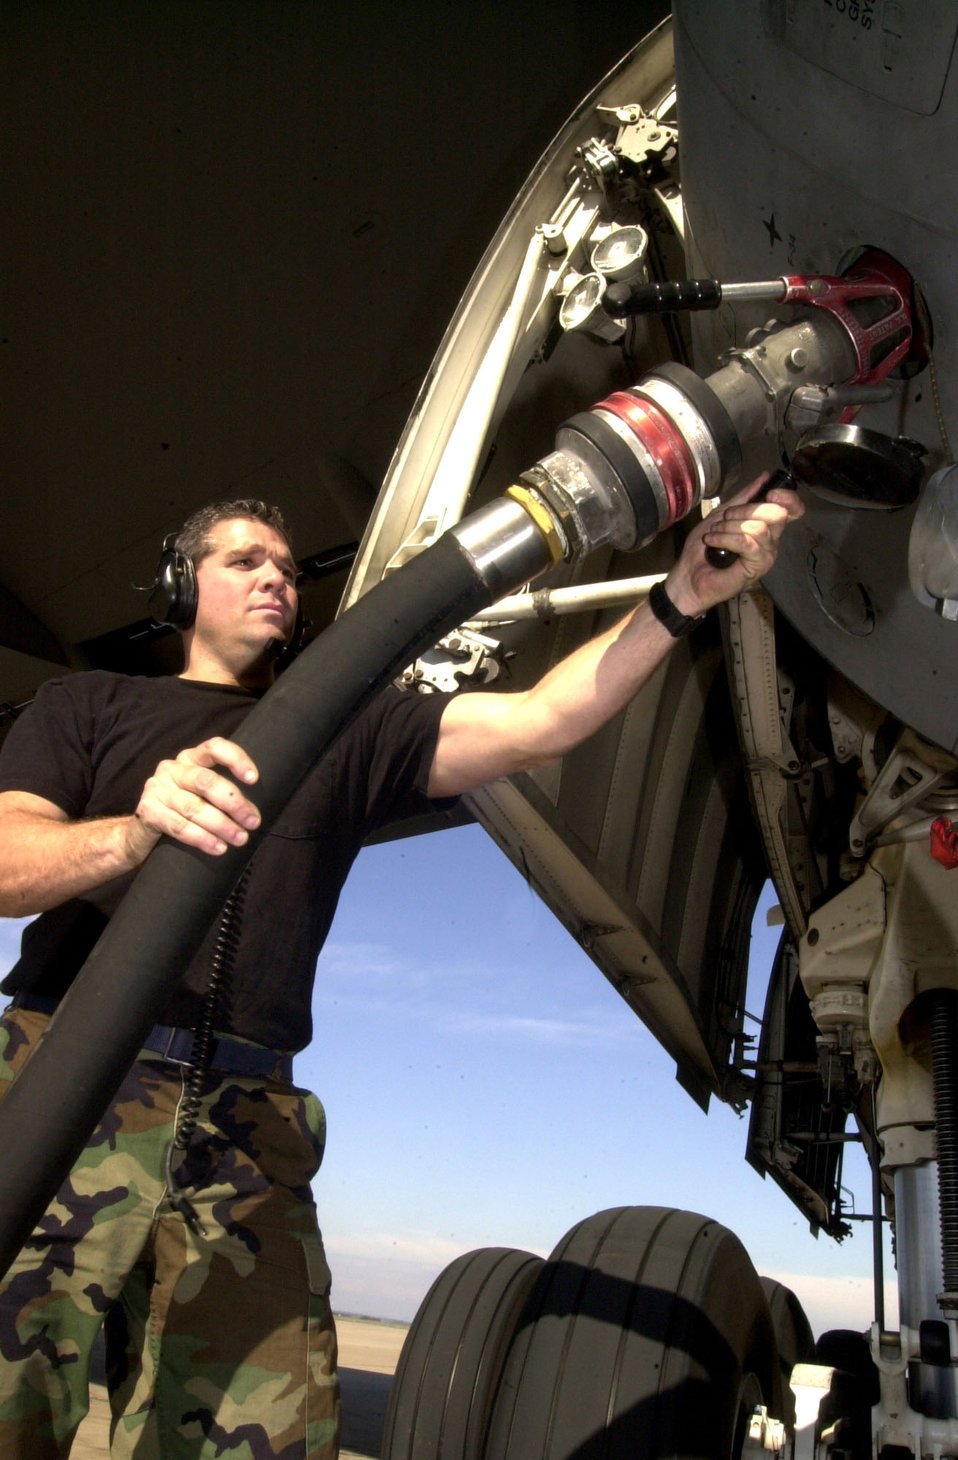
Yargeau

OPERATION ENDURING FREEDOM -- Tech. Sgt. Bruce Yargeau from the 439th Aircraft Generation Squadron at Westover Air Reserve Base, Mass., attaches a fuel hose to a C-5 Galaxy at an operating location in support of the U.S. Central Command execution of Operation Enduring Freedom. More than 28,660 people in the Air National Guard and Air Force Reserve have been called to active-duty to support Operations Noble Eagle and Enduring Freedom.